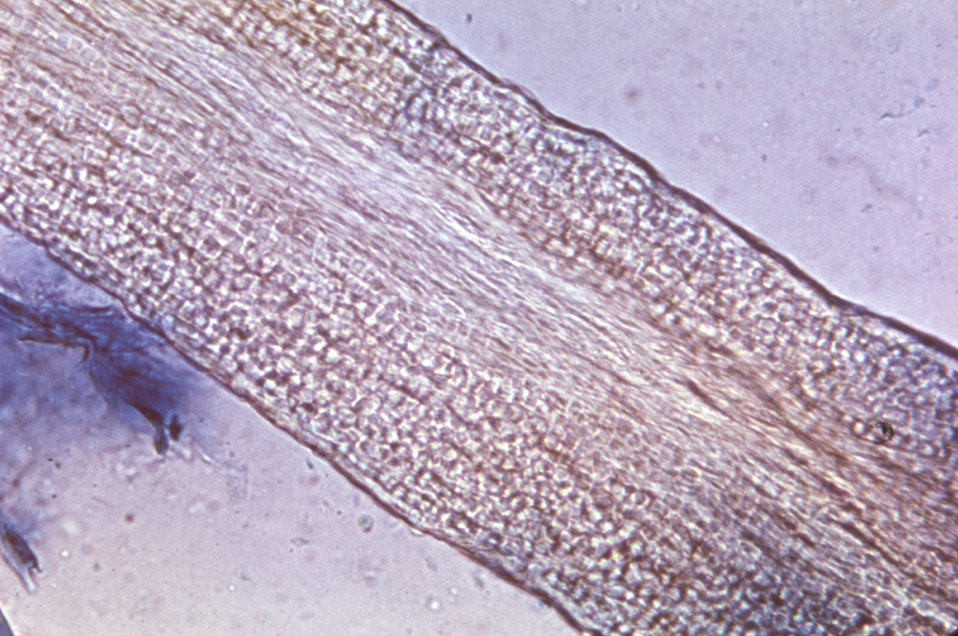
Magnified 200X, this photomicrograph depicts the histopathologic changes in the structure of a hair follicle, in a patient with ringworm, infected with the dermatophyte, Trichophyton tonsurans.